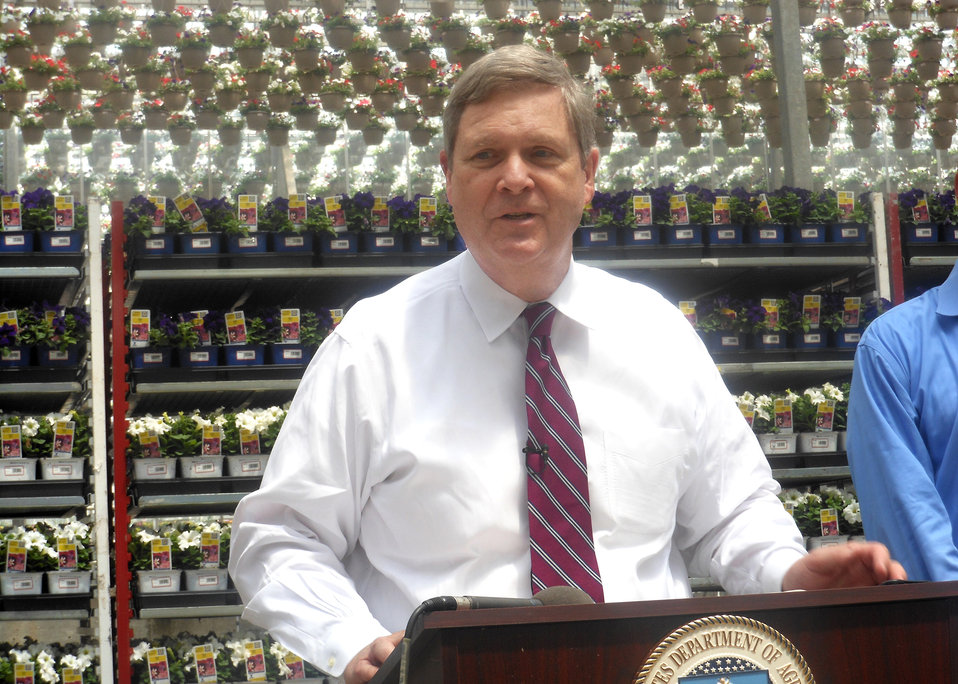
Agriculture Secretary Tom Vilsack announces the selection of 31 individuals and rural business owners in North Carolina through the U.S. Department of Agriculture’s (USDA) Rural Energy for America Program (REAP) which was re-authorized in the 2008 Farm Bill at Metrolina Greenhouses in Huntersville, NC on Monday, June 25, 2012. The selected agricultural producers and rural small businesses reduce energy consumption and cost, use renewable energy technologies in their operation, or conduct feasibility studies for renewable energy projects. The Metrolina greenhouses operation has drastically cut its energy bills by replacing a natural gas heating system with a wood boiler, funded in part with USDA REAP. The wood chips used to fuel the boiler also provide an additional market for local lumber mills and logging operations. Metrolina produced 187 billion BTUs from the biomass boilers between October 1, 2011 and May 30, 2012.